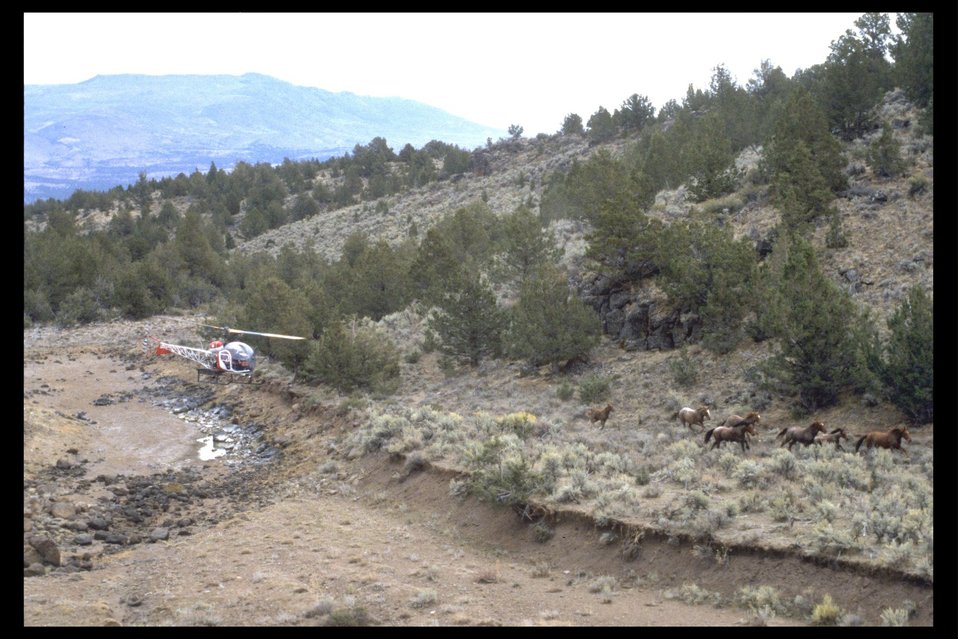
Helicopter driving South Steens wild horses into a trap.